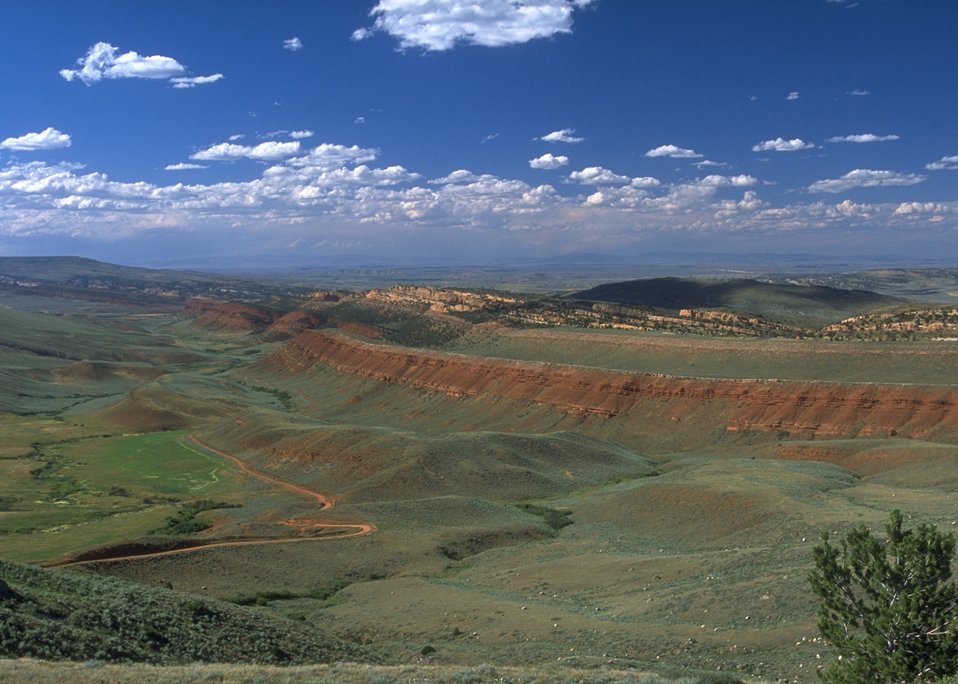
Red Canyon from overlook along Highway 28, Lander Field Office.